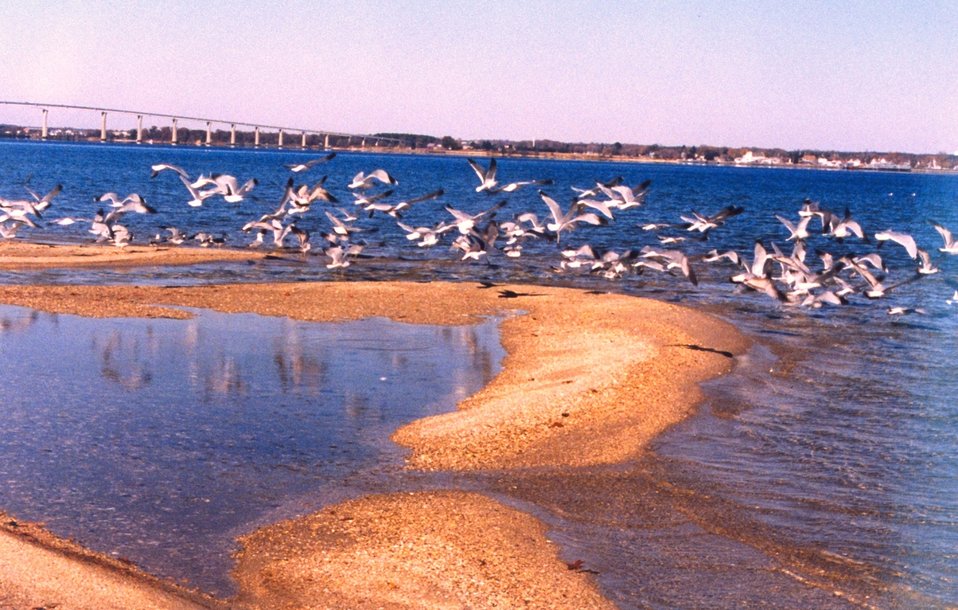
Sea gulls on a Patuxent River beach.